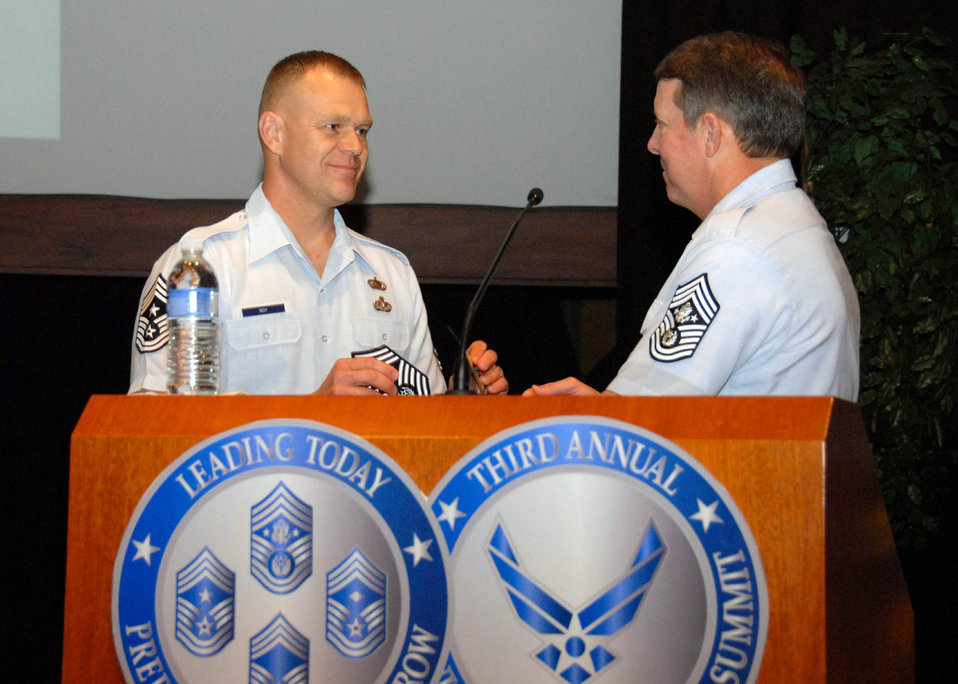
Air Force leaders name next top enlisted leader

Chief Master Sgt. of the Air Force Rodney J. McKinley (right) introduces his replacement, Chief Master Sgt. James A. Roy, to attendees of the Senior Enlisted Forum May 8 at Maxwell Air Force Base, Ala. Chief Roy, who currently is the senior enlisted advisor to the U.S. Pacific Command combatant commander, was selected by Air Force Chief of Staff Gen. Norton Schwartz to become the 16th Chief Master Sergeant of the Air Force. He will assume his duties on June 30, following Chief McKinley's retirement.